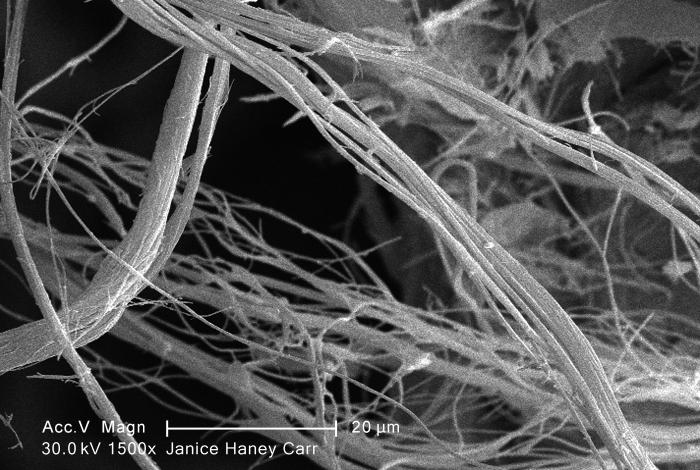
Under a high magnification of 1500X, this scanning electron micrograph (SEM) revealed some of the microcrystalline ultrastructure exhibited by a piece of raw chrysotile, or white asbestos, which had been excavated from the Lowell Asbestos Mine on Belvidere Mountain, Vermont.